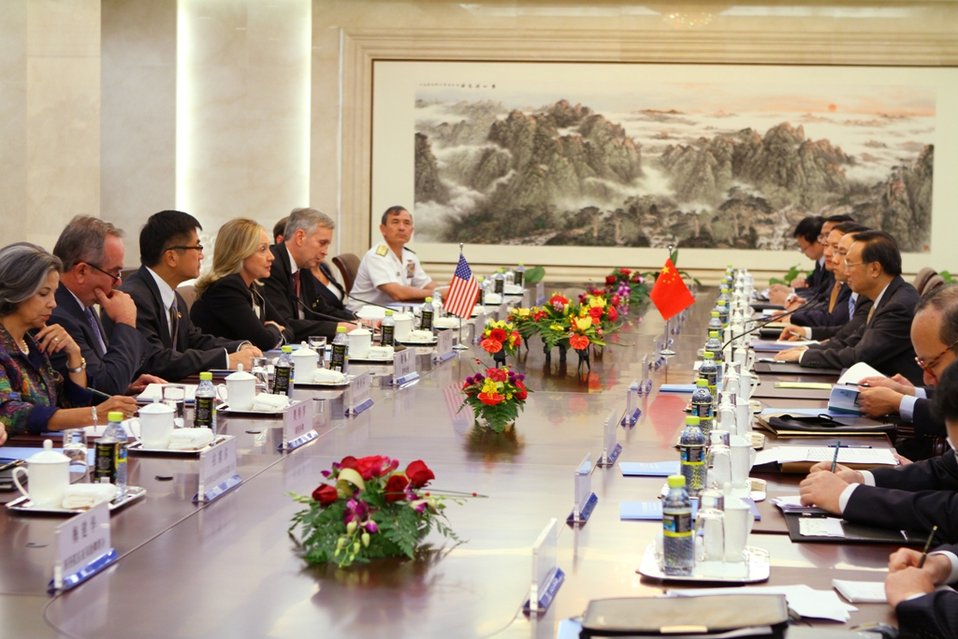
Secretary Clinton Meets With Chinese Foreign Minister Yang Jiechi

U.S. Secretary of State Hillary Rodham Clinton meets with Chinese Foreign Minister Yang Jiechi at the Chiense Foreign Ministry of Affairs in Beijing China, September 4, 2012. Accompanying Secretary Clinton from left to right are: U.S. representation pictured (left to right) are: Under Secretary for Civilian Security, Democracy, and Human Rights Mario Otero, Assistant Secretary of State for East Asian and Pacific Affairs Kurt Campbell, U.S. Ambassador to China Gary Locke, Secretary Clinton, Defense Attache Colonel James Brown, and Vice Admiral Harry Harris.